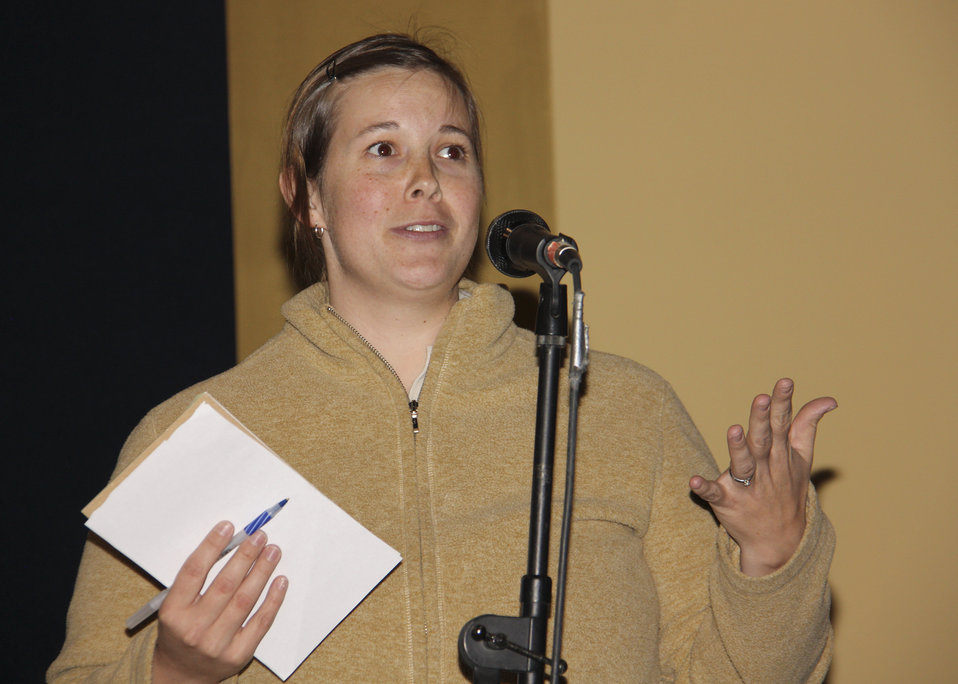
The U.S. Department of Agriculture (USDA) held the Cultural Transformation Employee listening sessions in Davis, CA, on Monday, April 12, 2010. USDA employees expressed their concerns with issues at the Department and made suggestions for correcting them and improving the image of USDA. USDA photo 10di1299-0937.